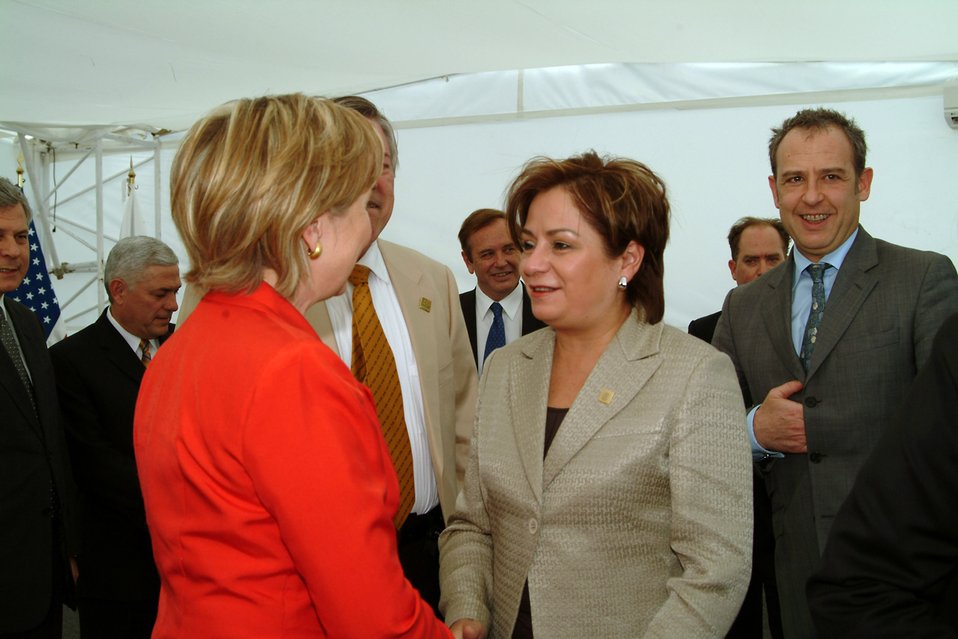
Secretary Clinton at Simeprode Power Plant

U.S. Secretary of State Hillary Rodham Clinton during a visit to the Simeprode power plant in Monterrey, Mexico March 26, 2009.